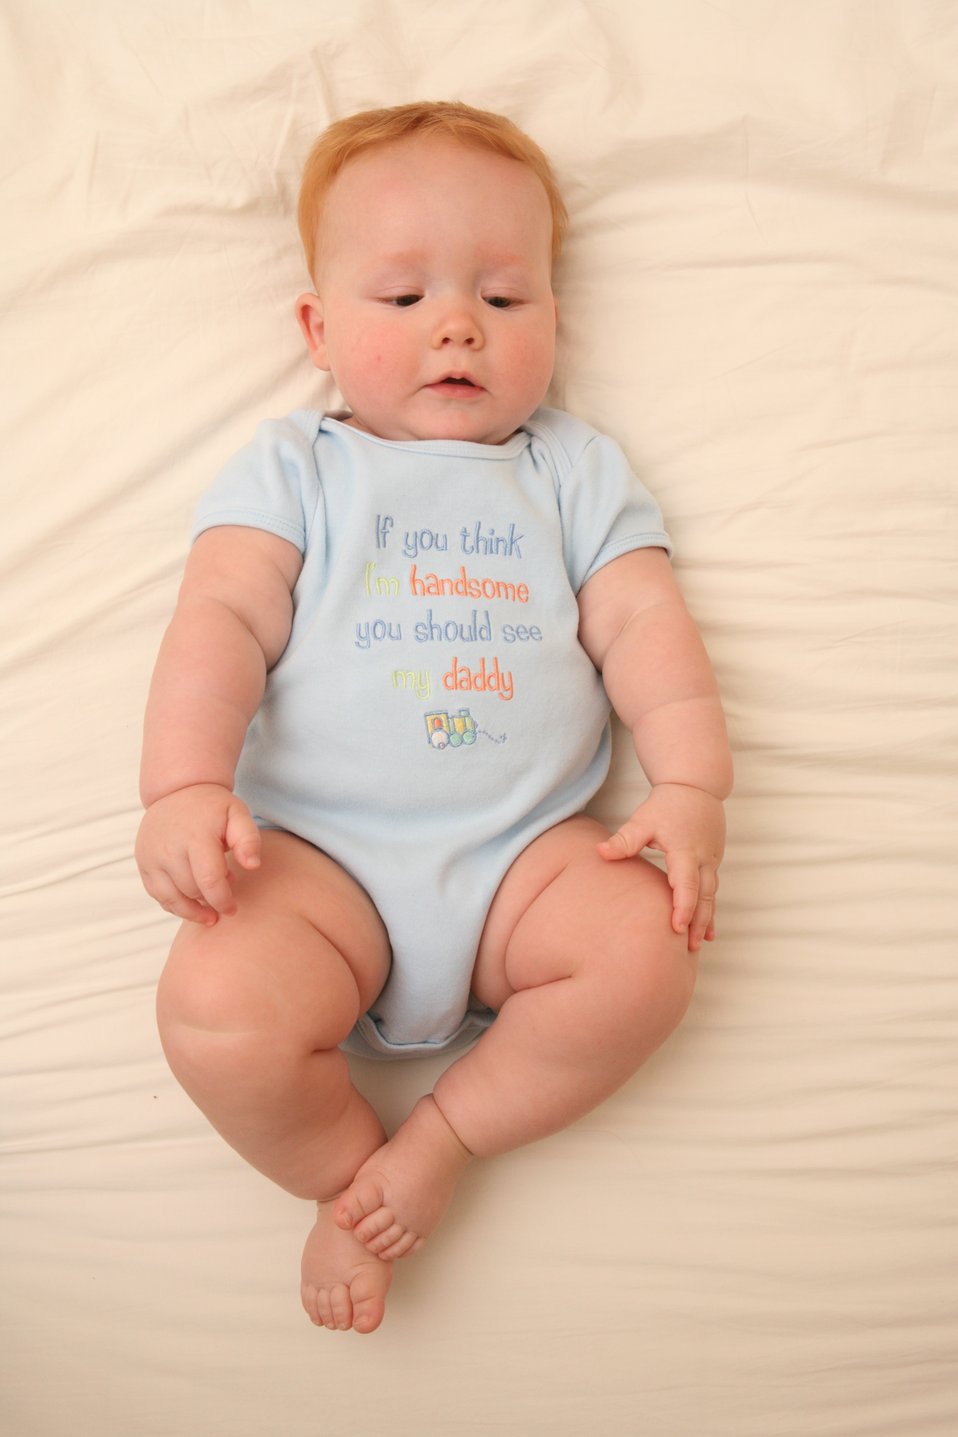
Infant wearing a onesie